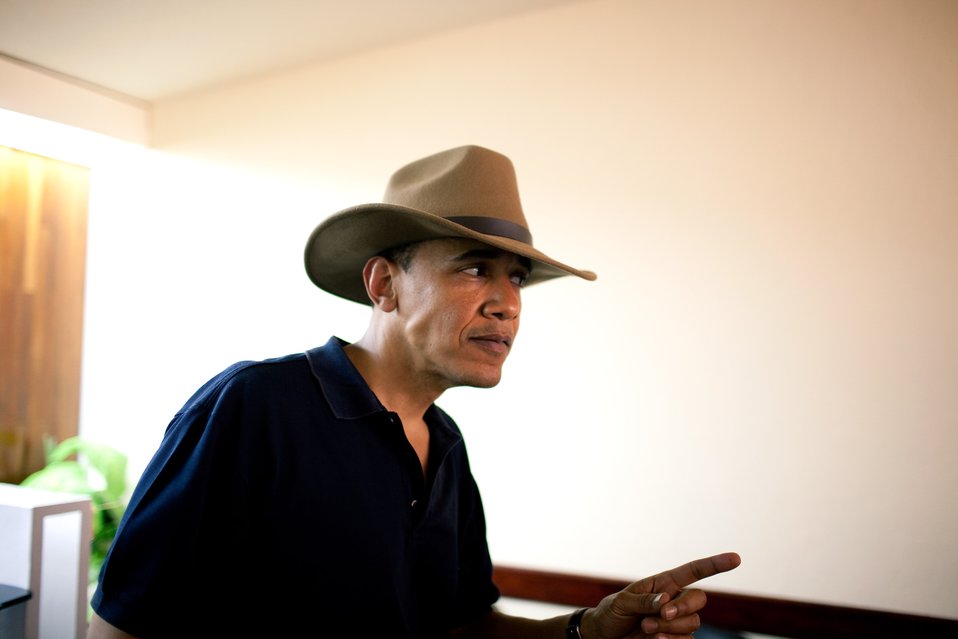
President Barack Obama jokingly shows off the hat he was given during his tour of the Pyramids and Sphinx in Egypt on June 4, 2009.